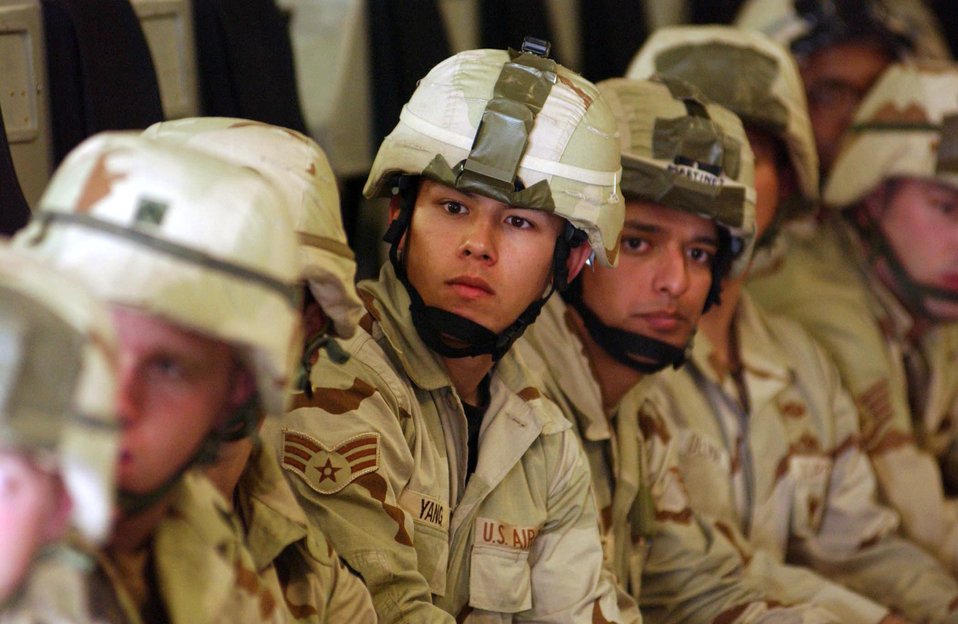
Prepare to jump

OPERATION IRAQI FREEDOM -- Senior Airman Mitchell Yang, 86th Expeditionary Contingency Response Group, prepares for his jump into Northern Iraq March 27 with paratroopers from the 173rd Airborne Brigade, Vicenza, Italy. Based at Ramstein Air Base Germany, the unit’s mission is to secure and prepare an airfield for flight operations.